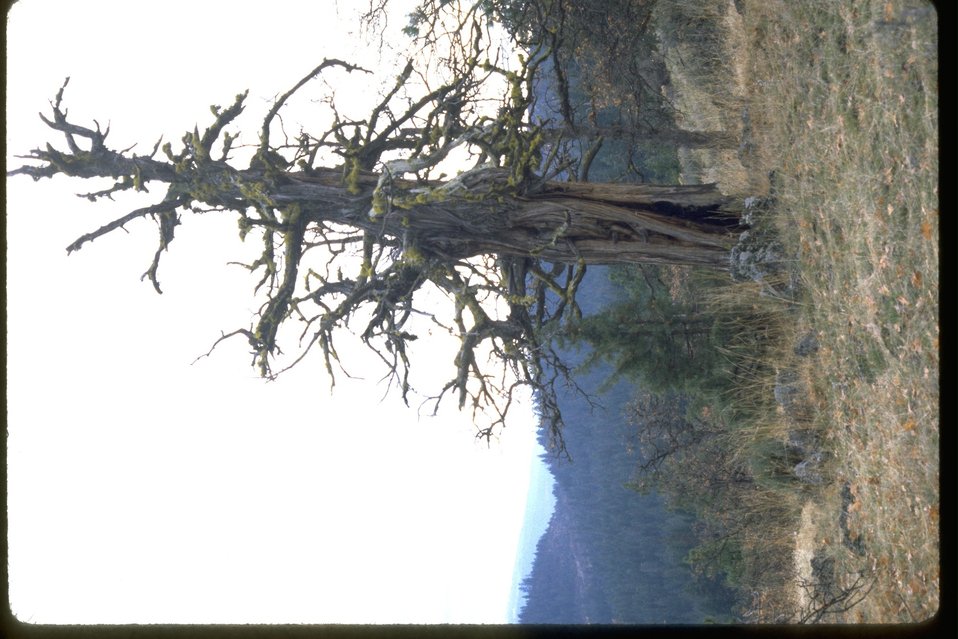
An old Juniper, north facing the slope at Oregon Gulch.